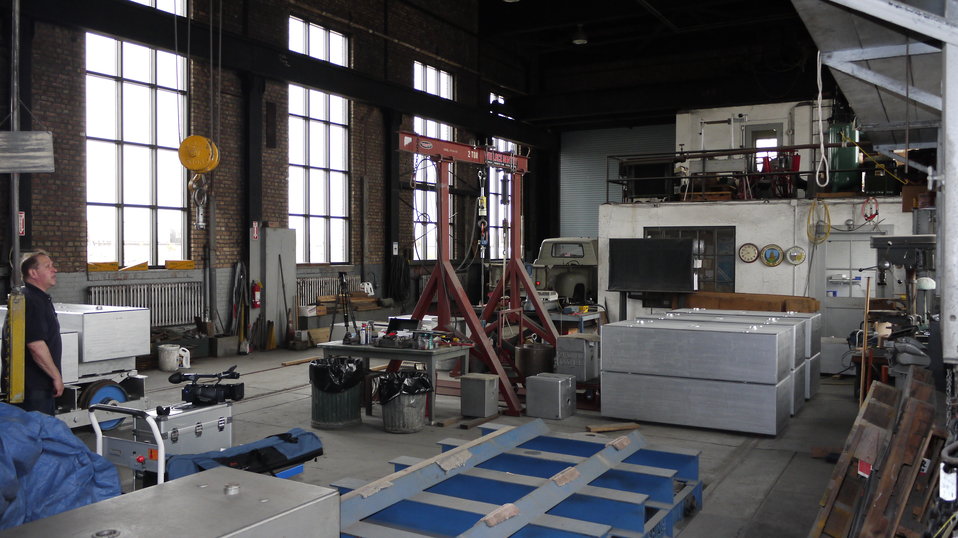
This is the 10,000 lb. test weight cart with some 10,000 lb. test weight standards loaded on the cart after the weights had been calibrated at the U.S. Department of Agriculture’s (USDA) Grain Inspection, Packers, and Stockyard Administration (GIPSA) Master Scale Depot in Chicago, IL on Jul. 2, 2013. USDA GIPSA entered into an agreement with the National Institute of Standards and Technology (NIST) and the Association of American Railroads (AAR) in 1980 transferring responsibility to USDA’s GIPSA to maintain the Master Scale facility in Chicago, IL and calibrate all the master scales in the continental U.S. annually.